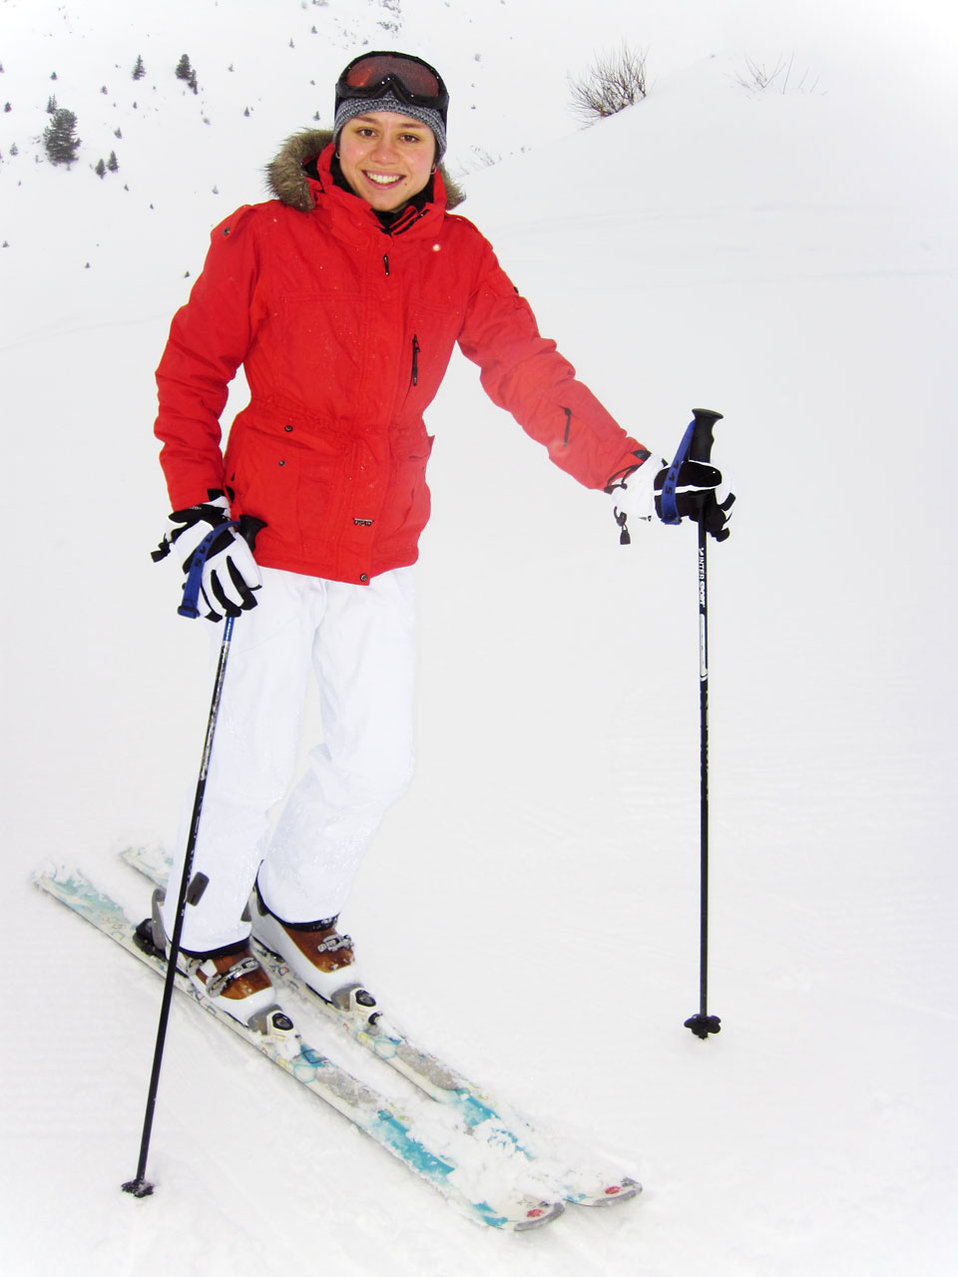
Female skier with skies on slope.